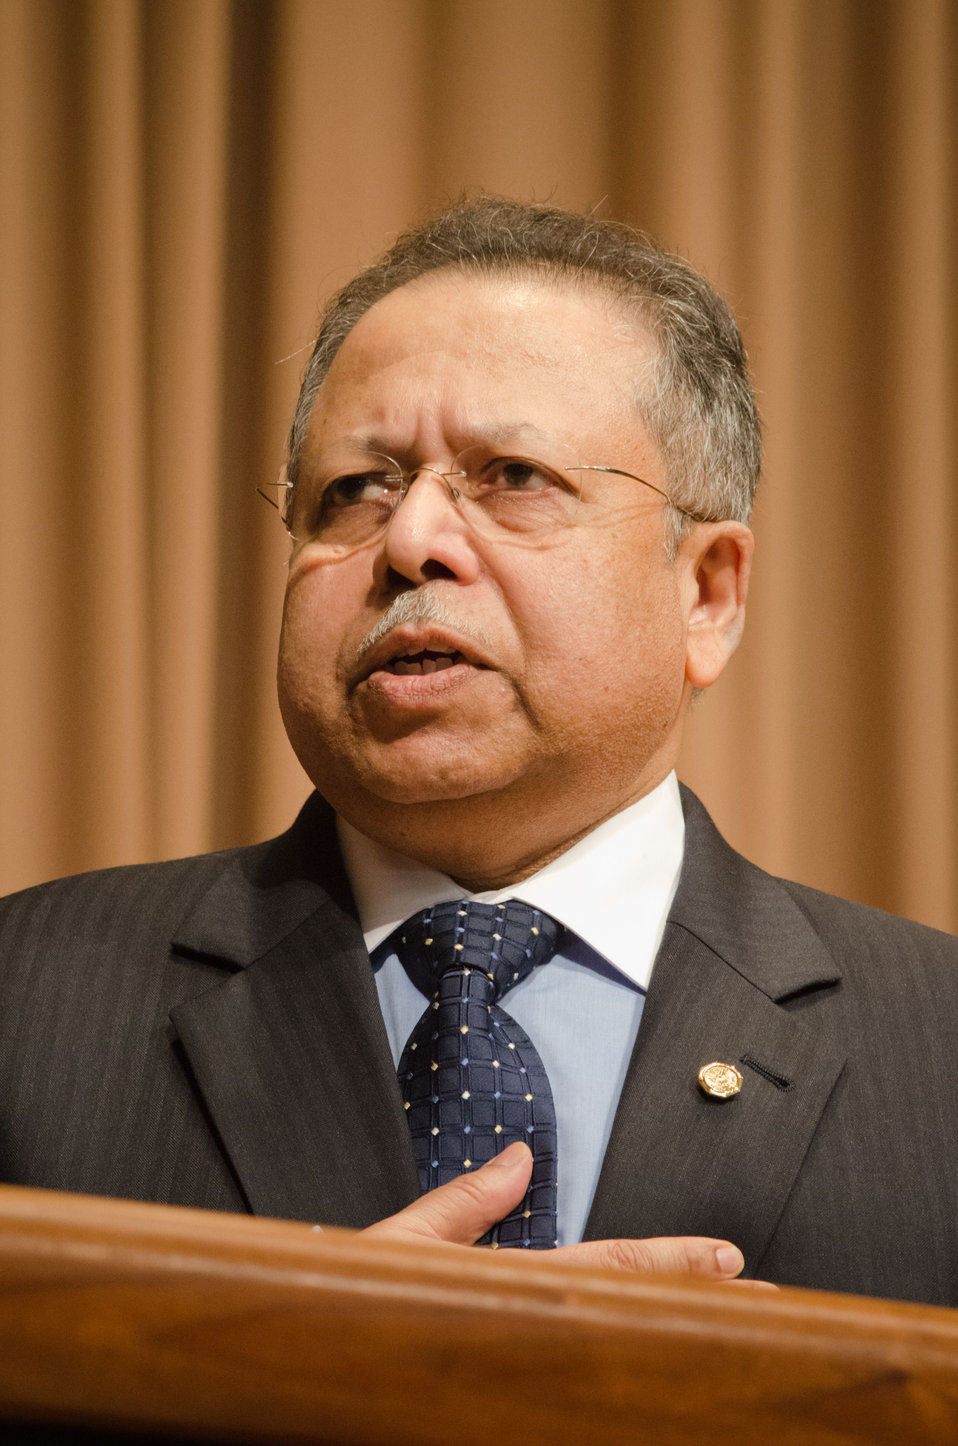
Agriculture Food Safety Inspection Service Senior Leader-Chemistry, Toxicology and Related Science Dr. Pat Basu gave the Pledge of Allegiance at the 2012 Asian Pacific American Heritage Observance “Striving for Excellence in Leadership, Diversity and Inclusion” at the U.S. Department of Agriculture in Washington, D.C. on Thursday, May 24, 2012.